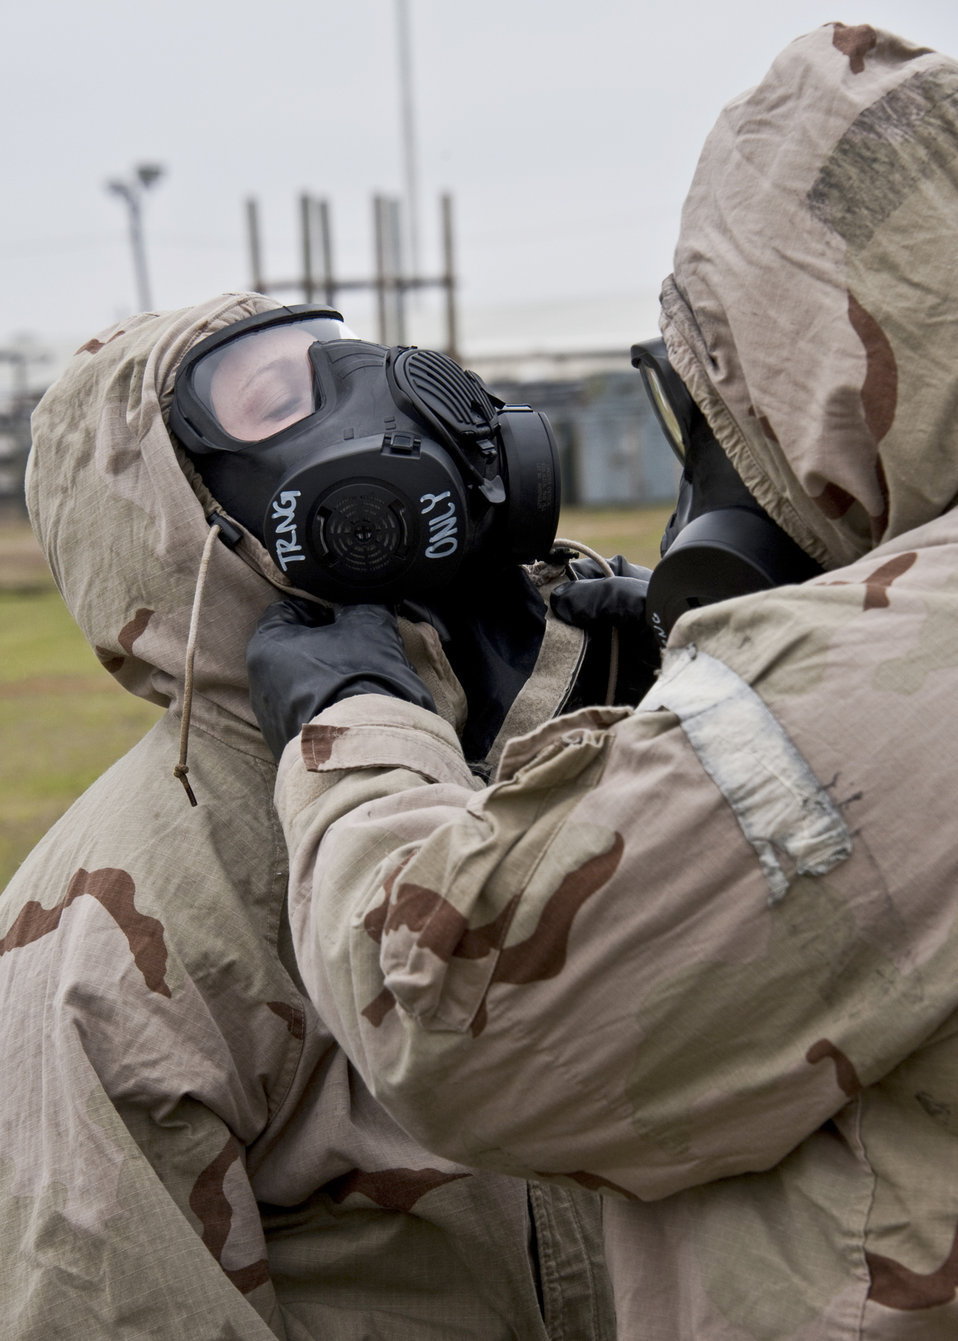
Operational readiness exercise

An Airman assists his wingman Feb. 24, 2011, during an operational readiness exercise at Eglin Air Force Base, Fla.